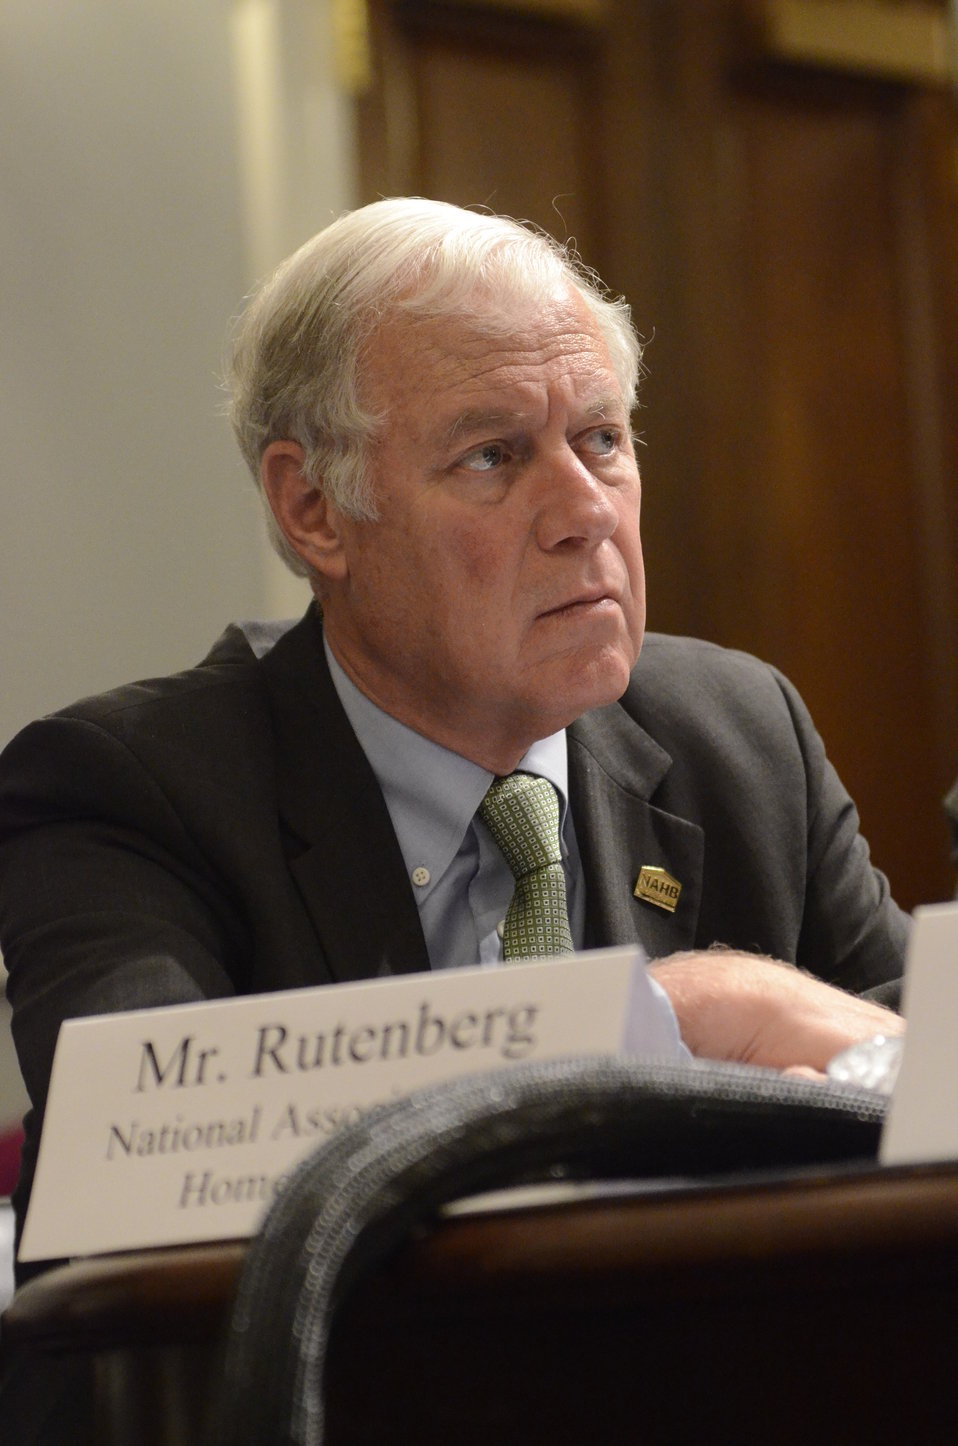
Chairman of the Board National Association of Home Builders Barry Rutenberg testifies on Retailers & Entertainers Lacey Implementation & Enforcement Fairness Act & Freedom from Over-Criminalization & Unjust Seizures Act at the Longworth House Office Building in Washington, D.C. on Tuesday, May 8, 2012.